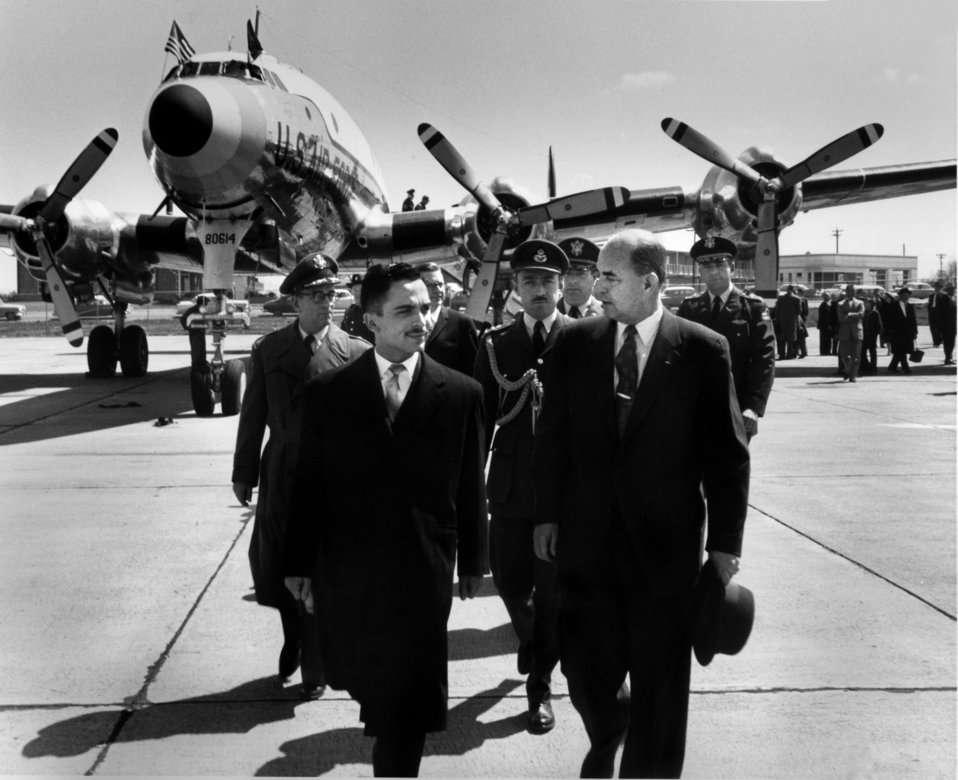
Arrival of King Hussein of Jordan at Knoxville's McGhee Tyson Airport

59-0229 DOE photo by Ed Westcott

Arrival of King Hussein of Jordan at Knoxville's McGhee Tyson Airport 3-30-1959